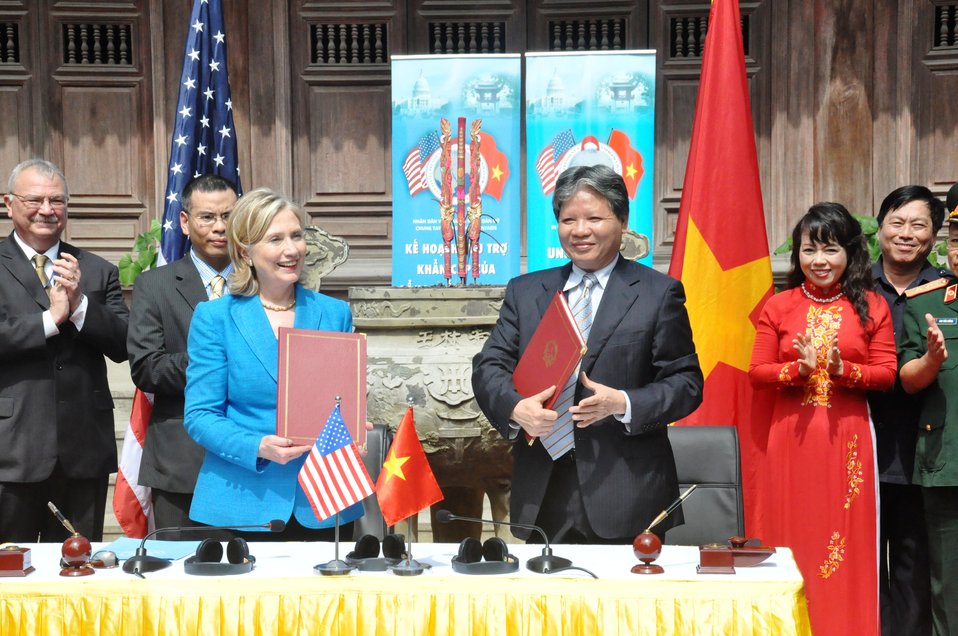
Secretary Clinton and Vietnamese Justice Minister Ha Hung Cuong Smile After Signing a Memorandum of Understanding

U.S. Secretary of State Hillary Rodham Clinton and Vietnamese Justice Minister Ha Hung Cuong, flanked by U.S. Ambassador to Vietnam Michael W. Michalak (left) and Vietnamese officials, smile after signing a memorandum of understanding for the U.S.-Vietnam PEPFAR Partnership Framework at Ngoc Lam Pagoda in Hanoi, Vietnam, on July 22, 2010.